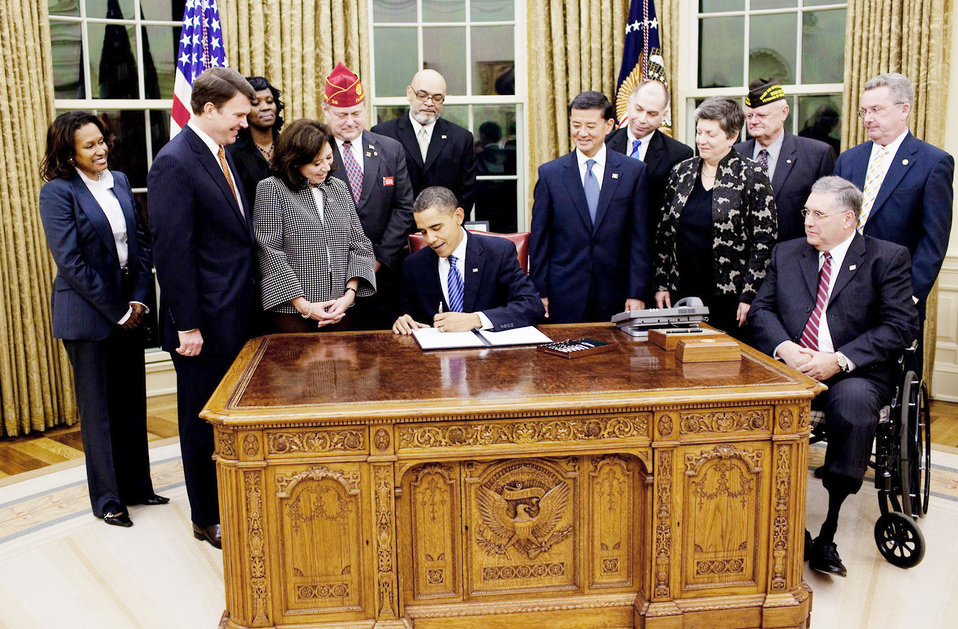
Executive order seeks more veterans in government

President Barack Obama signs an executive order on the employment of veterans in the federal government Nov. 9, 2009 in the Oval Office.